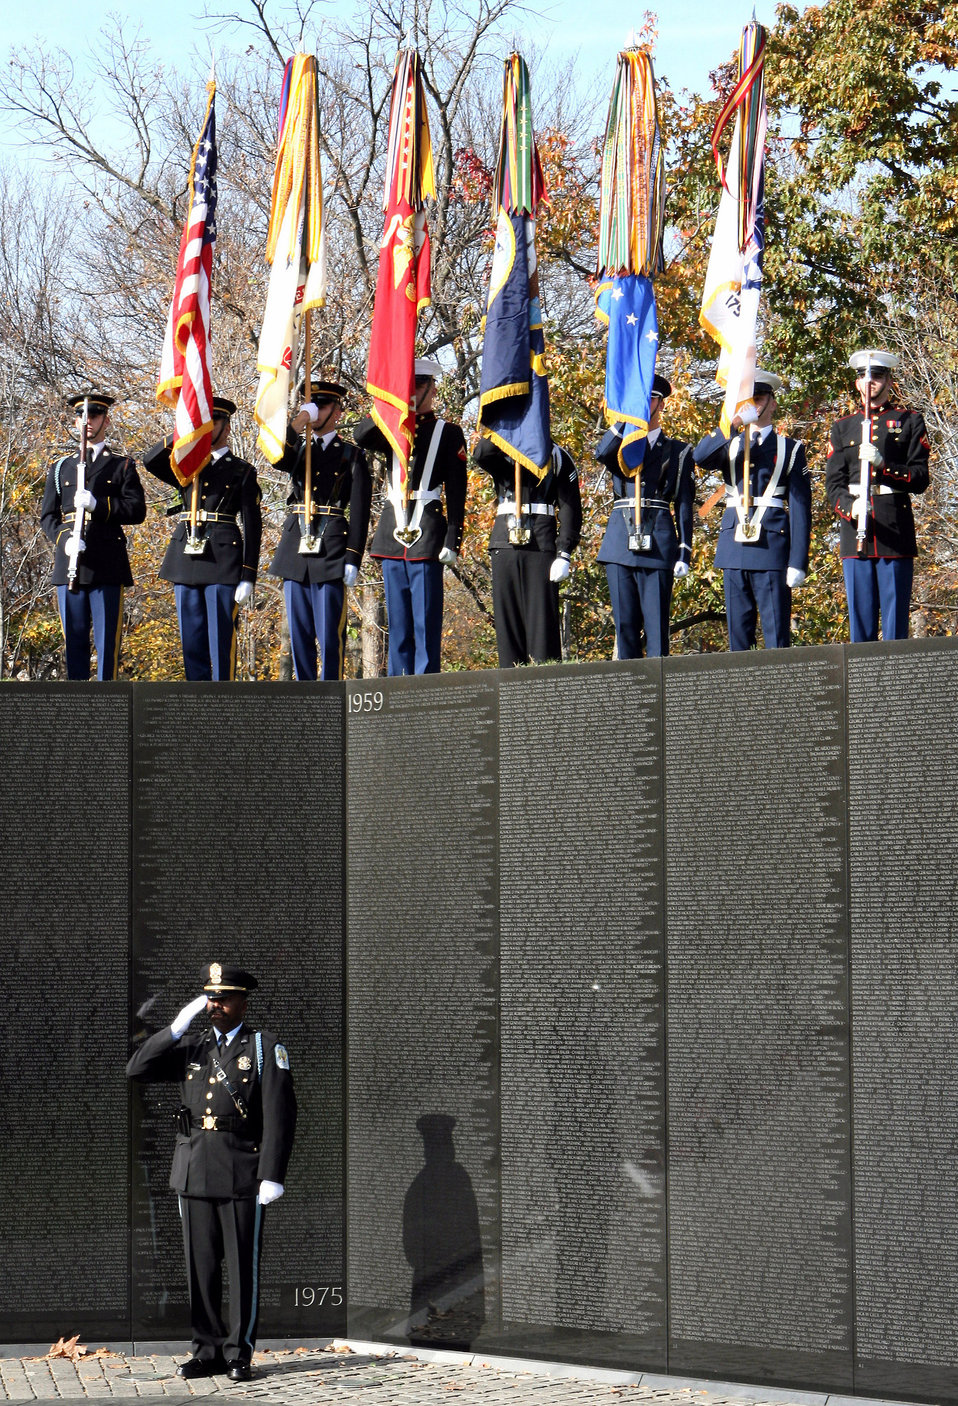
Present colors

The Armed Forces Color Guard presents the colors during the 15th Anniversary Commemoration of the Vietnam Women's Memorial Nov. 11 at the Vietnam Veterans Memorial Wall in Washington.